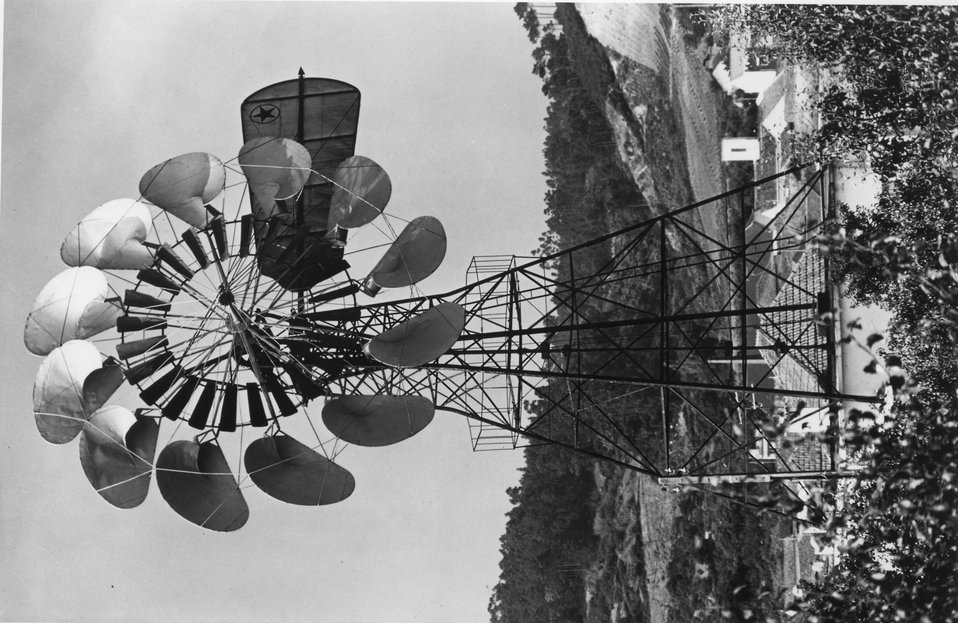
In a Portugese hamlet, plow-shaped extensions help boost the power of a windmill. c. undated